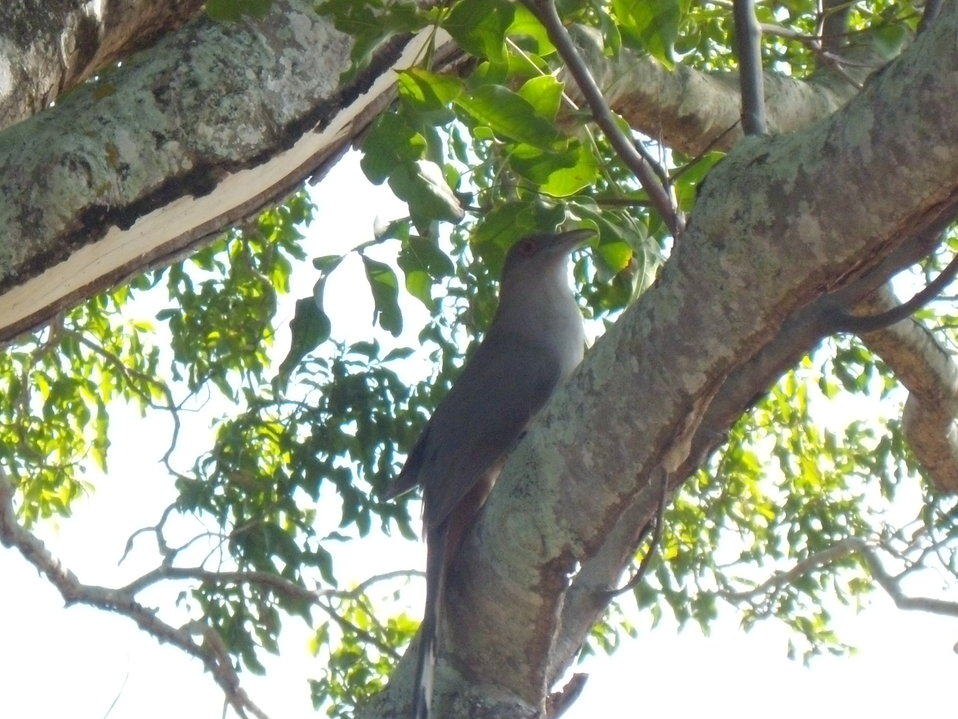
Great lizard cuckoo on South Andros Island

Great Lizard Cuckoo - species is only found on Puerto Rico, Cuba, and 3 Bahamian islands.